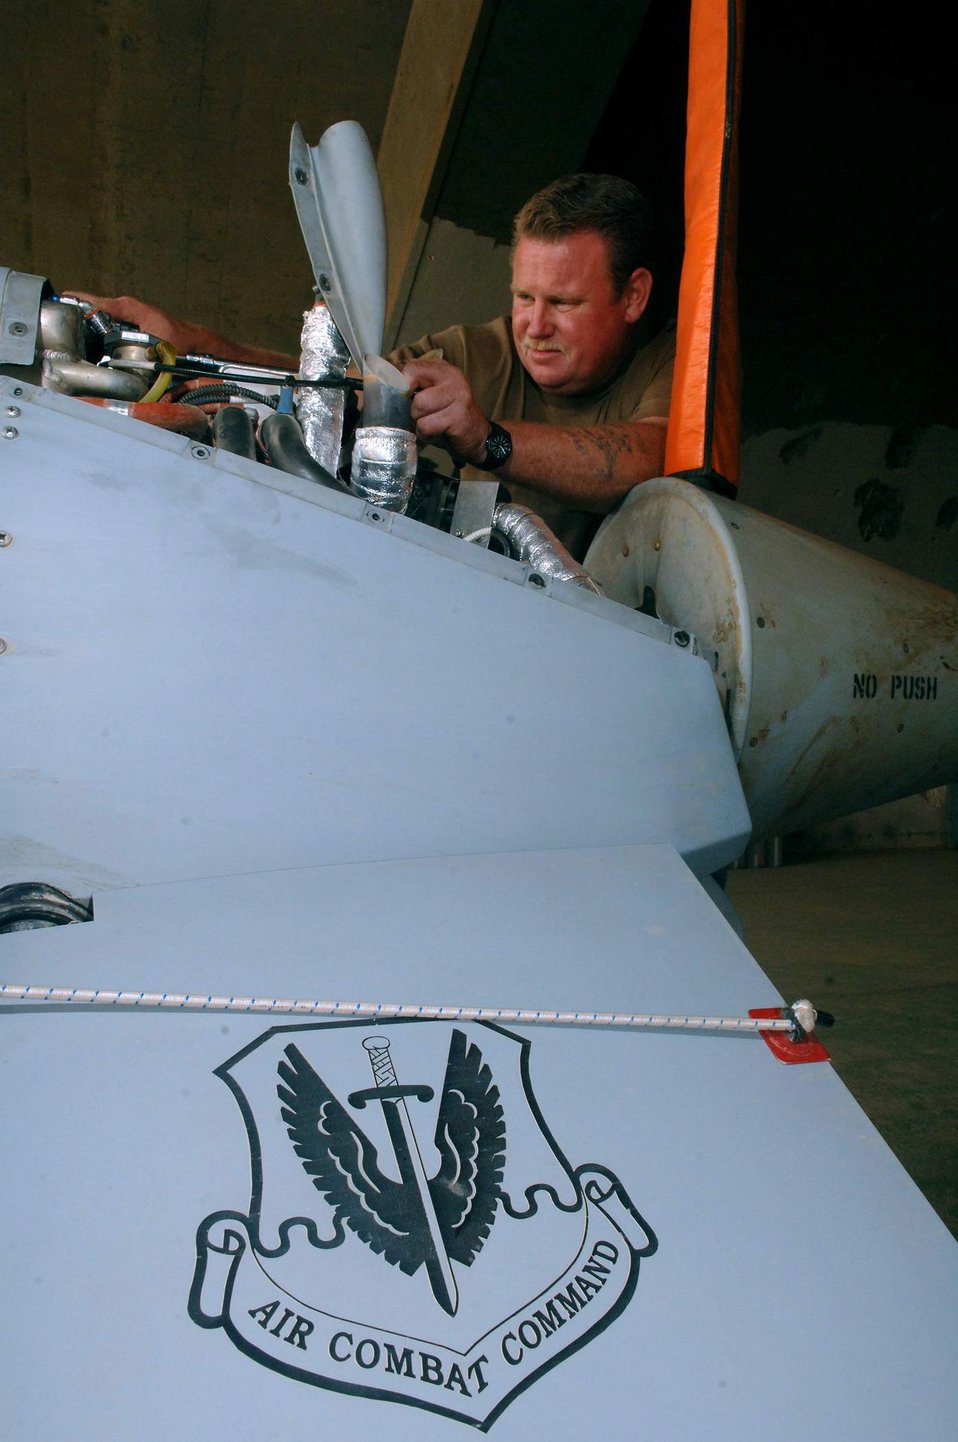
Sept. 7 airpower summary: Predator is the eye in the sky

Russell Gordy works on a cooling fan on an MQ-1 Predator unmanned aerial vehicle after it flew over Balad Air Base, Iraq. The Predator provides armed reconnaissance, airborne surveillance and target acquisition for Operation Enduring and Iraqi Freedom. Mr. Gordy is an avionics mechanic.